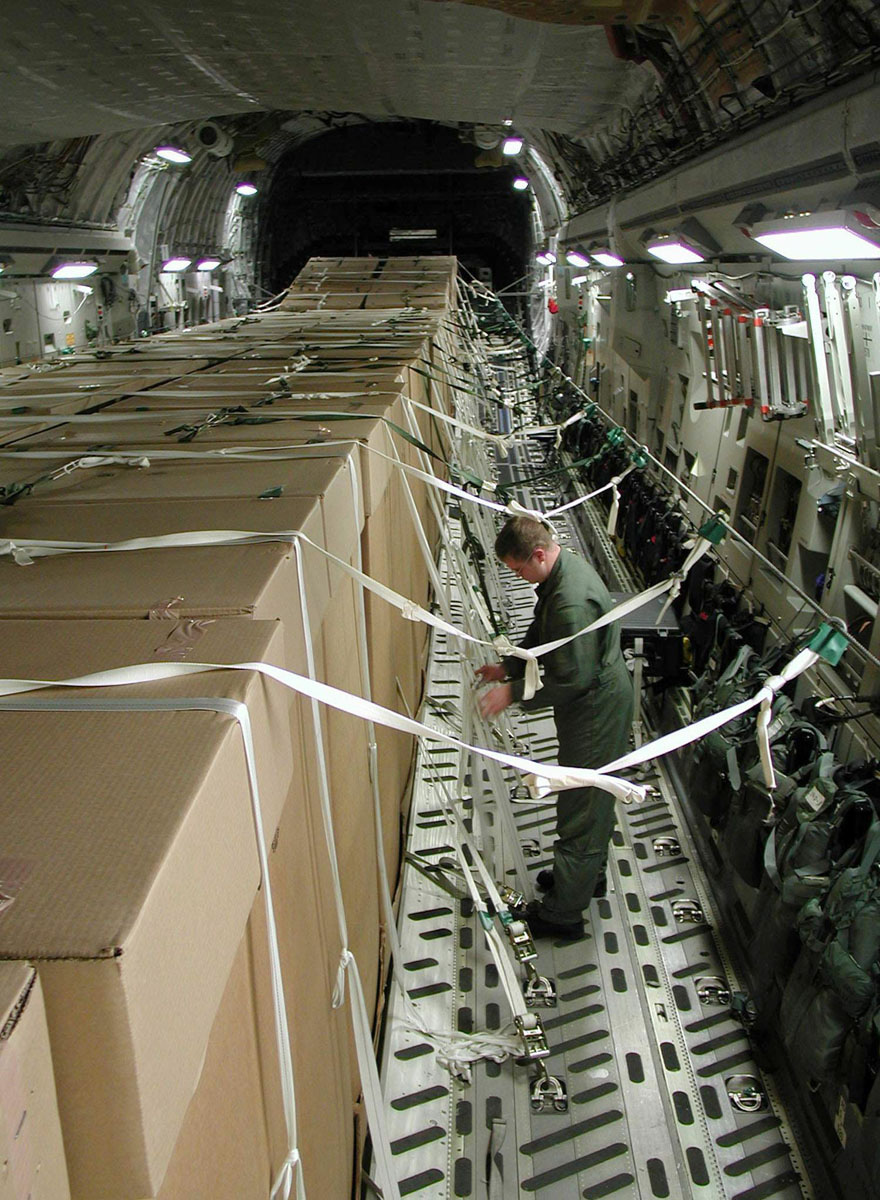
Mission 13

OPERATION ENDURIGN FREEDOM --